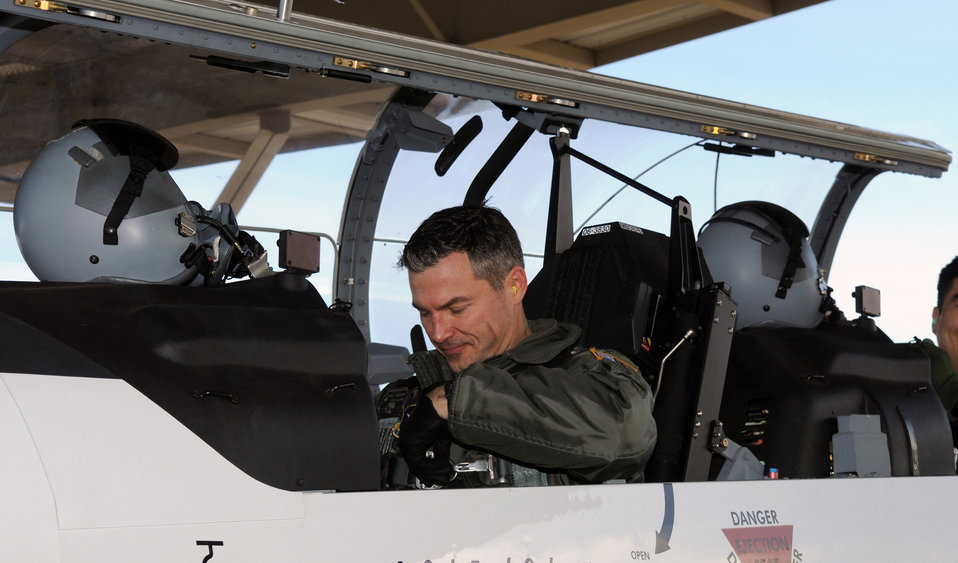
Airman pulls passengers from Continental Airlines wreckage

Lt. Col. Rich Lowe exits a T-6A Texan II after a flight Jan. 28 at Randolph Air Force Base, Texas. Colonel Lowe pulled several people from the wreckage of Continental Airlines Flight 1404 that crashed on takeoff at Denver International Airport Dec. 20, 2008. Colonel Lowe is an instructor pilot with the 39th Flying Training Squadron.